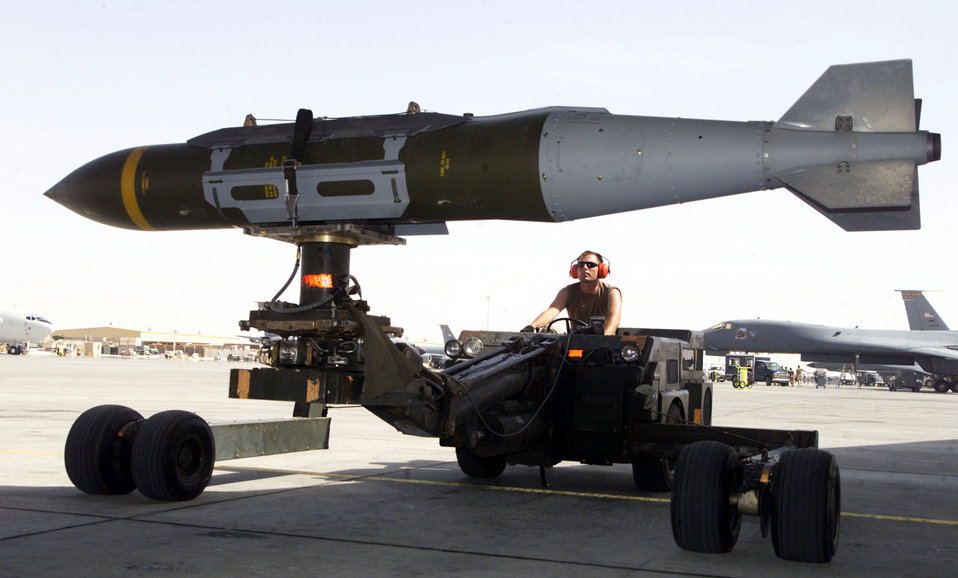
Smart bomb

OPERATION IRAQI FREEDOM -- A weapons loader prepares a GBU-31 joint direct attack munition for a mission at a forward-deployed location. Smart bombs like the JDAM have comprised 80 percent of the munitions used during this operation.